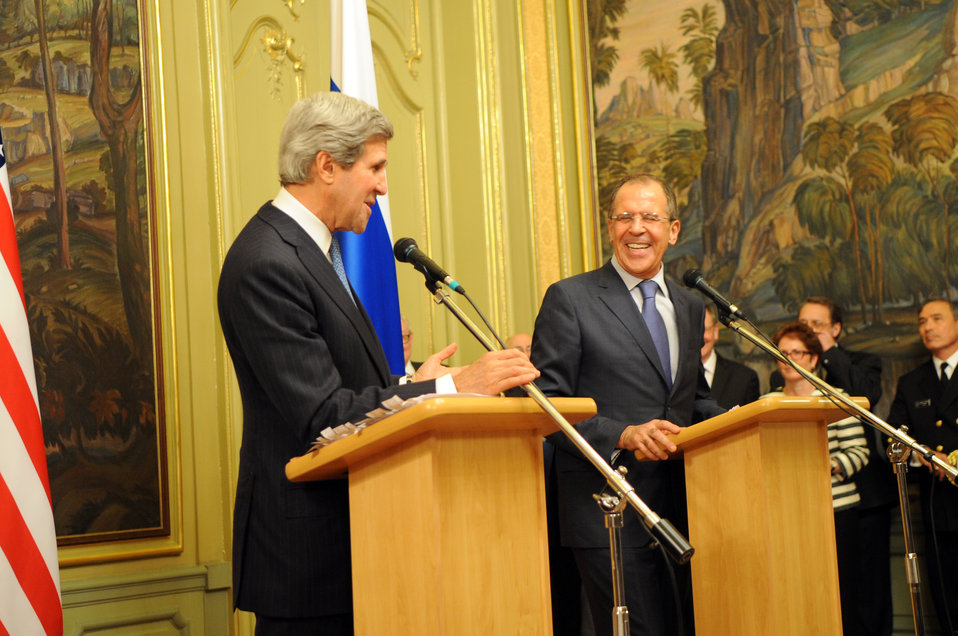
Secretary Kerry and Russian Foreign Minister Lavrov Share a Laugh

After their joint press conference in Moscow, Russia, U.S. Secretary of State John Kerry and Russian Foreign Minister Sergey Lavrov share a laugh over mentions of Team USA's loss to Russia at the World Hockey Championship on May 7, 2013.